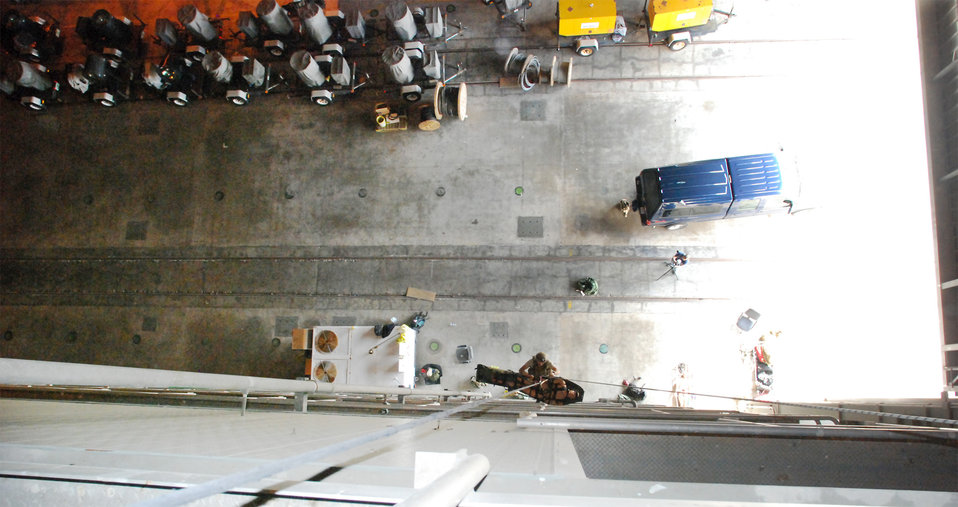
Rescue Airmen take on 'Titan' training

A pararescueman, or PJ, from the Air Force Reserve Command's 920th Rescue Wing is hauled up several stories while carrying a